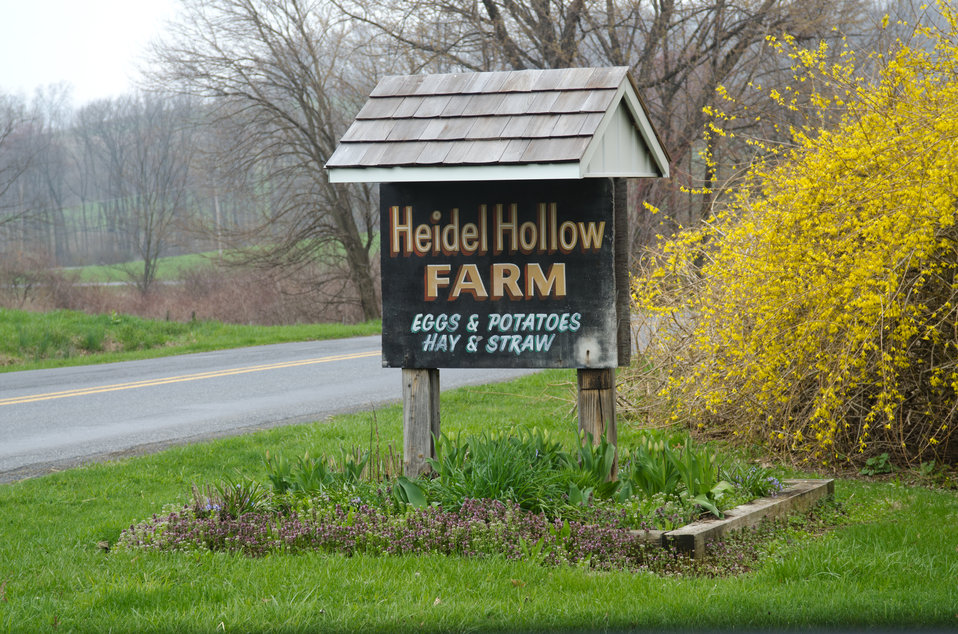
Heidel Hollow Farms, on Wednesday, April 20, 2011, has been a family owned farm since 1852 and is currently an 1,800 acre operation in Germansville, PA. Led by David Fink, President of Heidel Hollow Farms, they mainly produce and compact hay for exportand grow produce on 300 acres for local. With the financial help of the U.S. Department of Agriculture (USDA) an 896 panel solar array was recently installed on non farmable diversion ditches. Rated at 200 kilowatts, they project 240 megawatts of electricity to be produced each year, providing up to 70% of the farms electrical needs. Additionally, USDA financial assistance made it possible to replace the hay compactor’s diesel engines with clean low-maintenance, low operating cost electric motors to power the compactor's hydraulic system. The compactor increases the density of baled hay by two and half times for more efficient shipping to overseas customers.